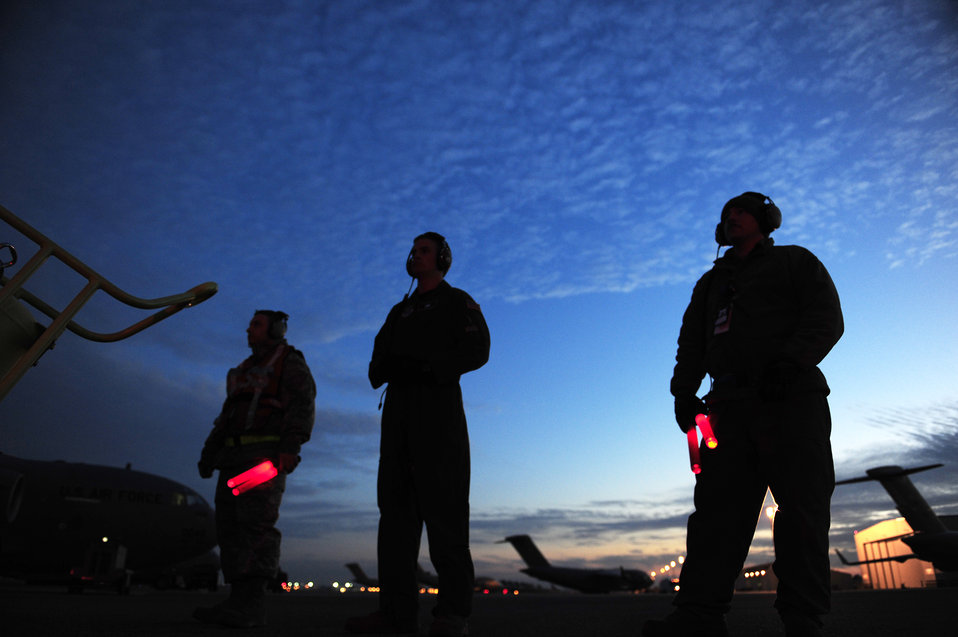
Haiti Relief Operations

Airmen prepare to taxi a C-17 Globemaster III Jan. 14, 2010, at Charleston Air Force Base, S.C, in support of coordinated relief efforts to Haiti.